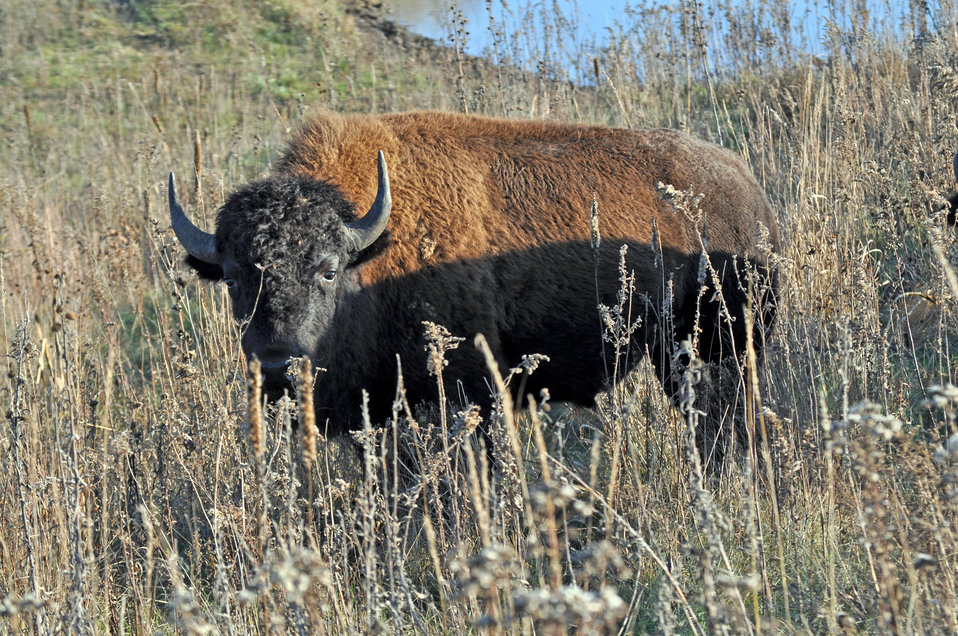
Bison at Dunn Ranch, an a prairie restored by The Nature Conservancy in northwest Missouri.